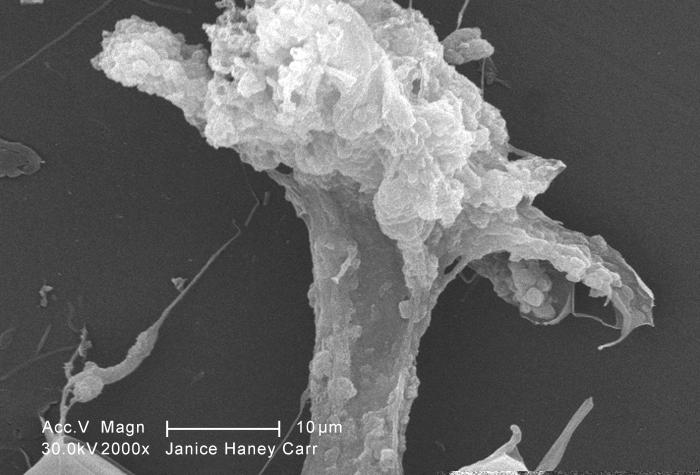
At a magnification of 2000X, this scanning electron micrograph (SEM) of an untreated water specimen extracted from a wild stream, which is mainly used to control flooding during inclement weather, revealed the presence of unidentified organisms, which included bacteria, protozoa, and algae. In this particular image, an expanding amorphous organic biofilm was featured within which numbers of amoeboid protozoa seemed to be embedded. For a colorized version of this image see PHIL 11714.